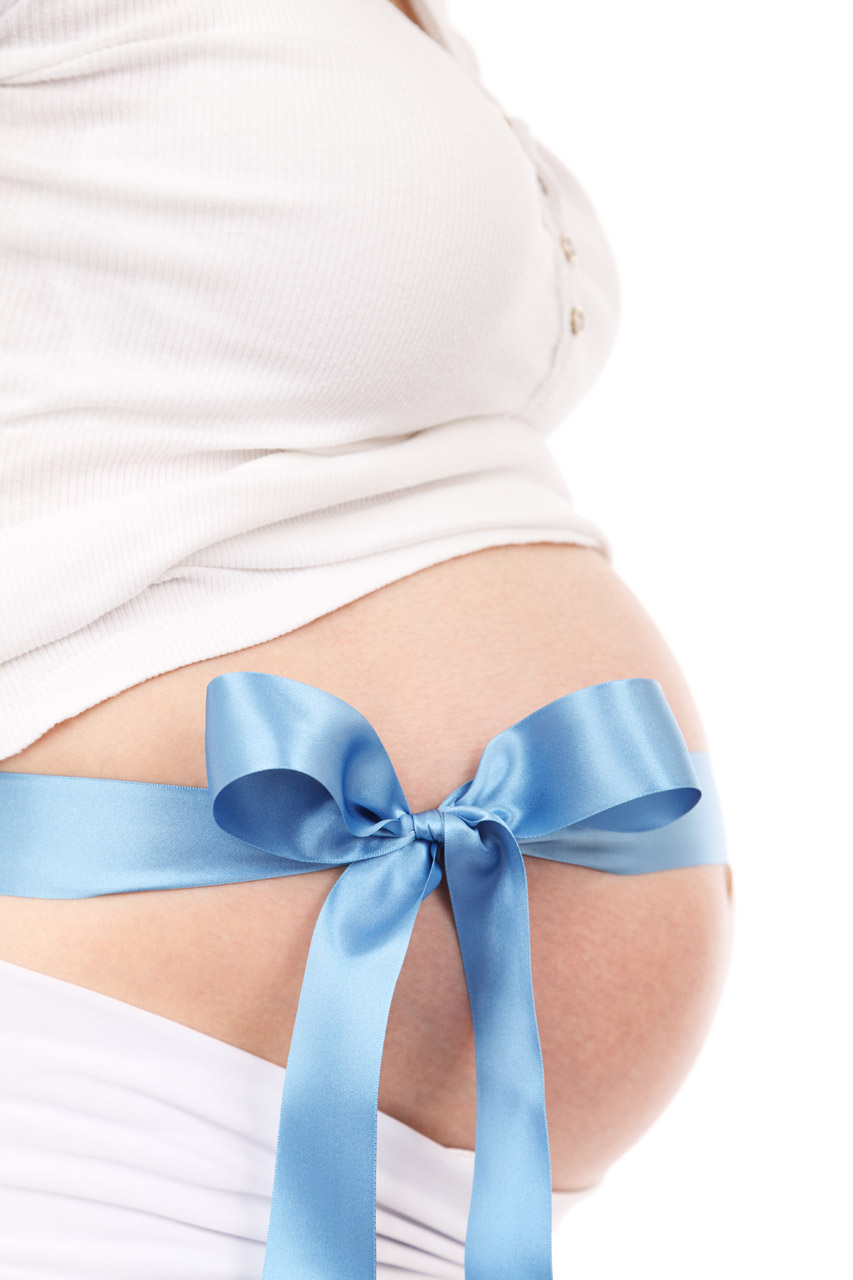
Blue ribbon on a belly

Expecting a baby boy.